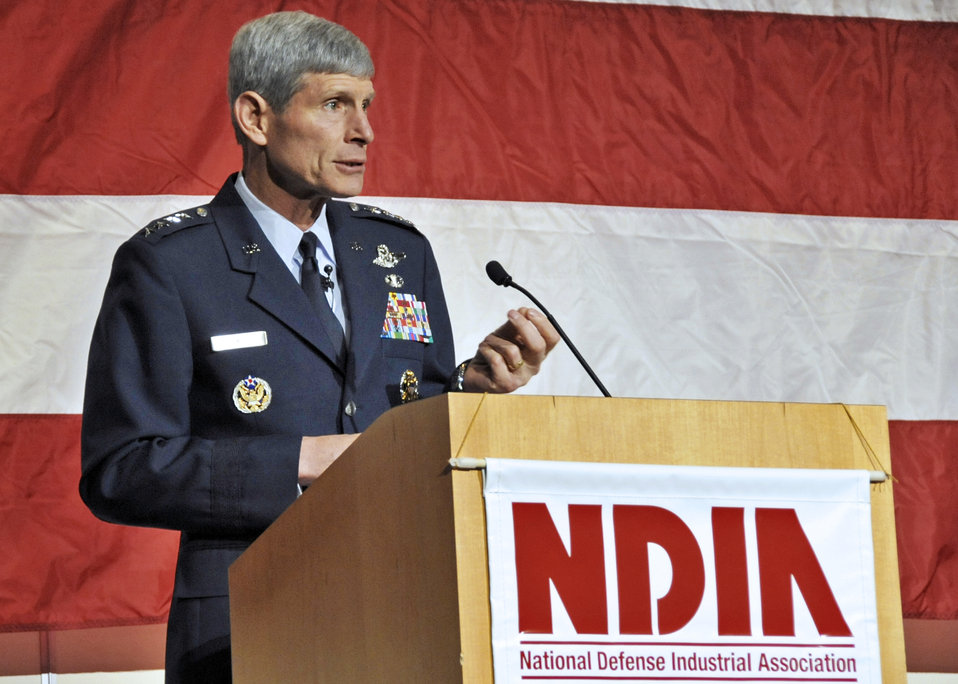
Armament Symposium

Air Force Chief of Staff Gen. Norton Schwartz speaks to an audience of industry and government personnel Oct. 5, 2010 at the Air Armament Symposium in Fort Walton Beach, Fla.
General Schwartz spoke about the need for efficiency, versatility and flexibility to create the decisive air and space power that is the trademark of the Air Force. This year's 36th annual, two-day symposium highlighted topics vital to national and international defense interests. Speakers from joint services and Air Force major commands shared the common thread of working together in a changing acquisition world.